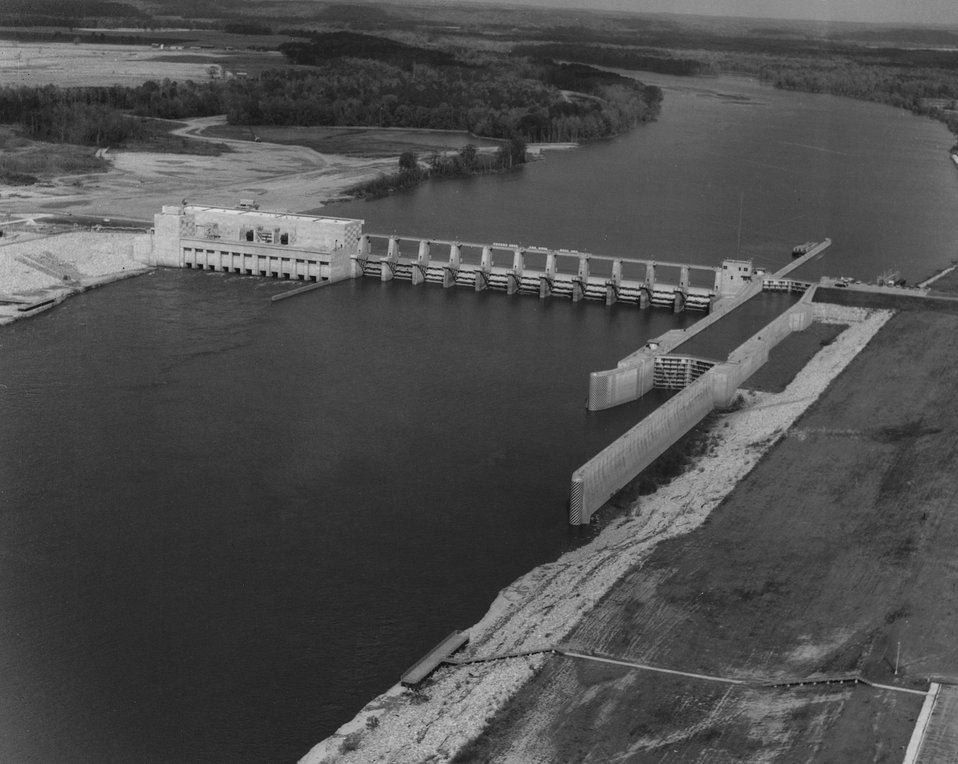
Jones Bluff Powerhouse, Lock & Dam. c. undated